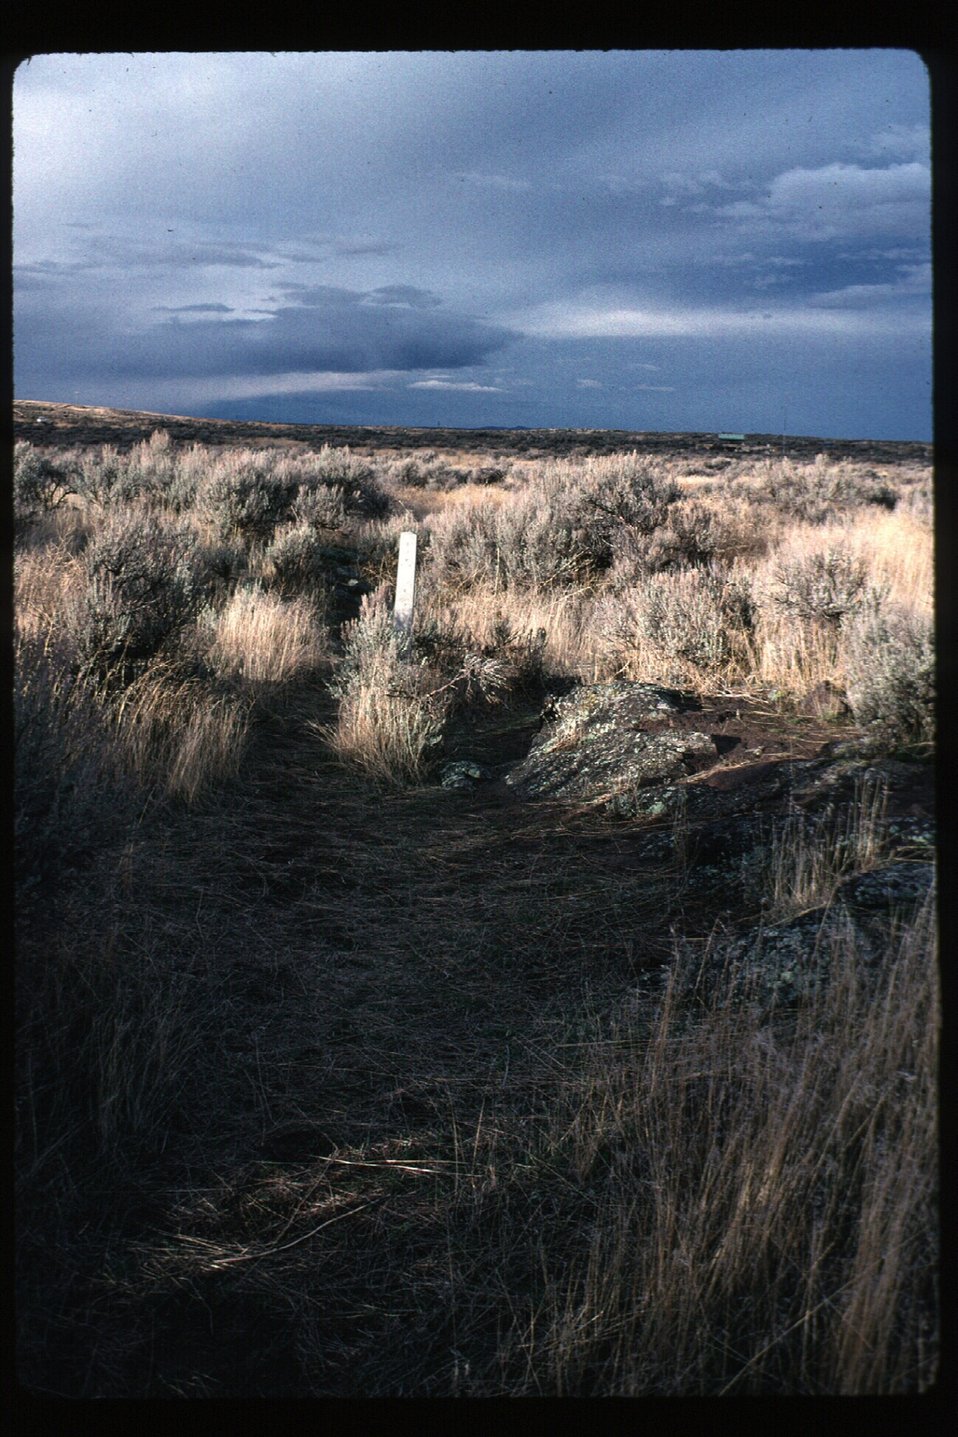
Oregon Trail USRD Upper Snake River District